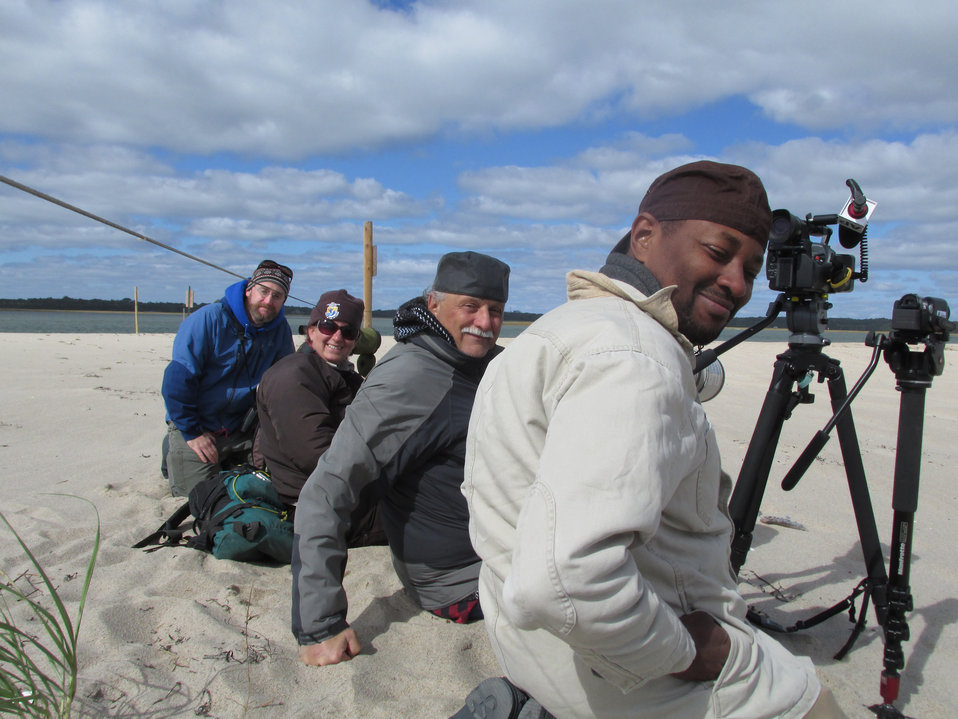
Red knot cannon netting in Cape Cod

Mark Faherty with MassAudubon, Stephanie Koch, U.S. Fish and Wildlife Service biologist, Associated Press photographer Stephan Savoia and reporter Rodrique Ngowi at Nauset Beach on the Cape.